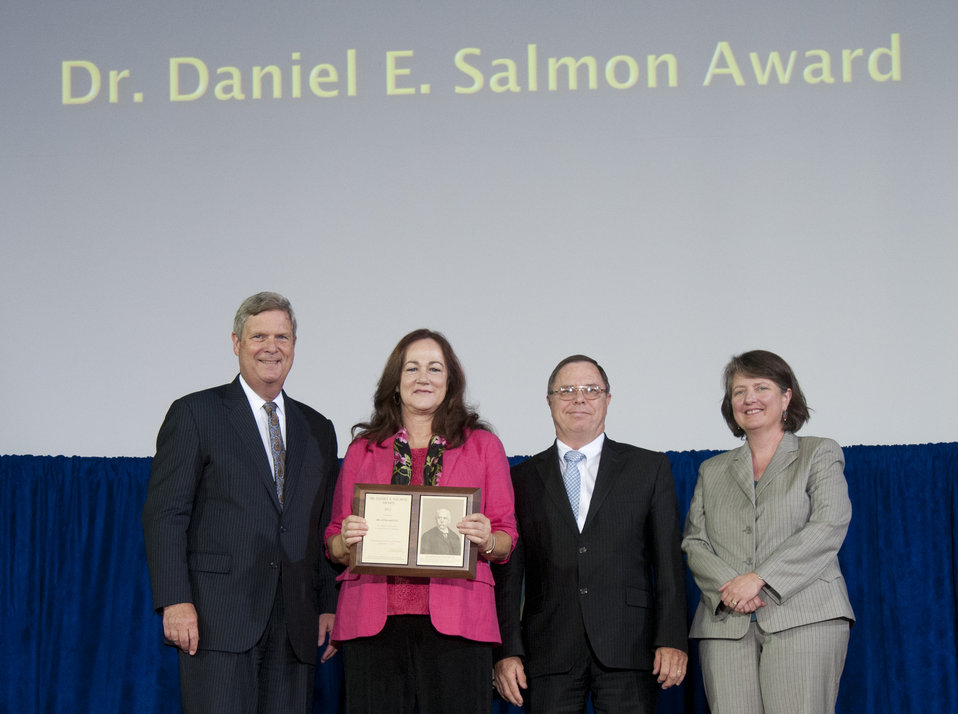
Agriculture Secretary Tom Vilsack and Agriculture Deputy Secretary Kathleen Merrigan present the Dr. Daniel E. Salmon Award to Dr. Lynda Collins Kelley at the U.S. Department of Agriculture (USDA) 64th Annual Honor Awards Ceremony in Washington, D.C. on Wednesday, Sept. 12, 2012. The Dr. Daniel E. Salmon Award is presented annually to recognize the outstanding contributions and notable service in the public's interest by a federally employed veterinarian who has no more than 10 years of service. This award was established in 1985 to honor the first director of the U.S. Department of Agriculture's Bureau of Animal Industry and is sponsored annually by the National Association of Federal Veterinarians.